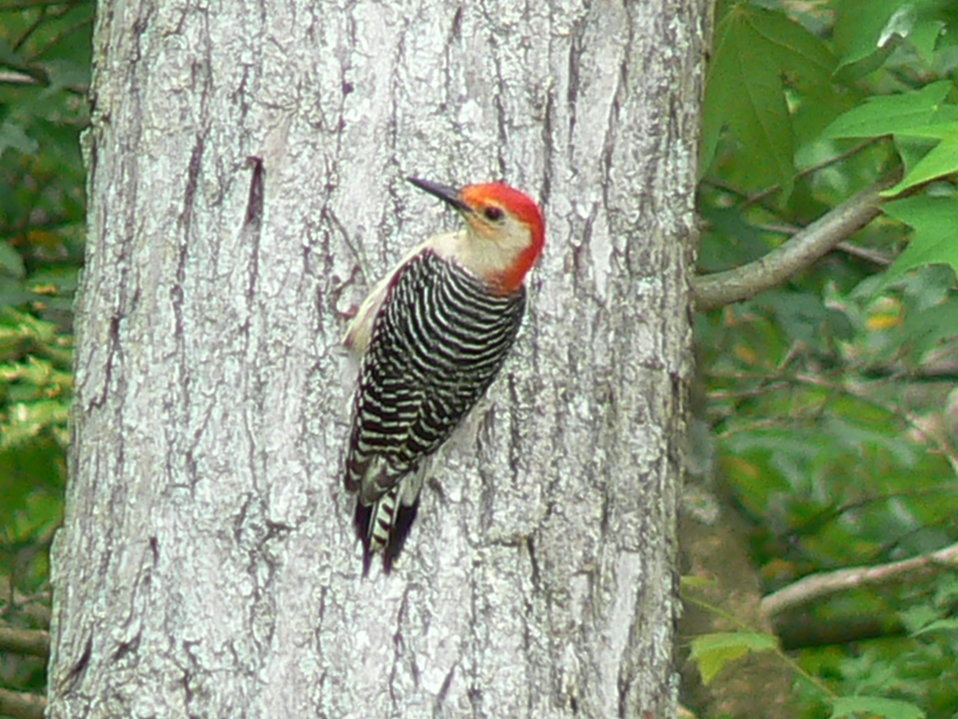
Red-bellied woodpecker at Cape May National Wildlife Refuge.